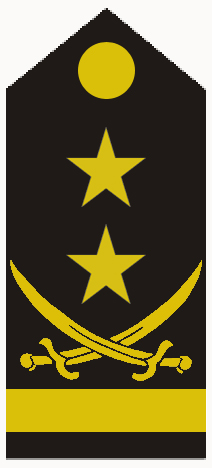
General